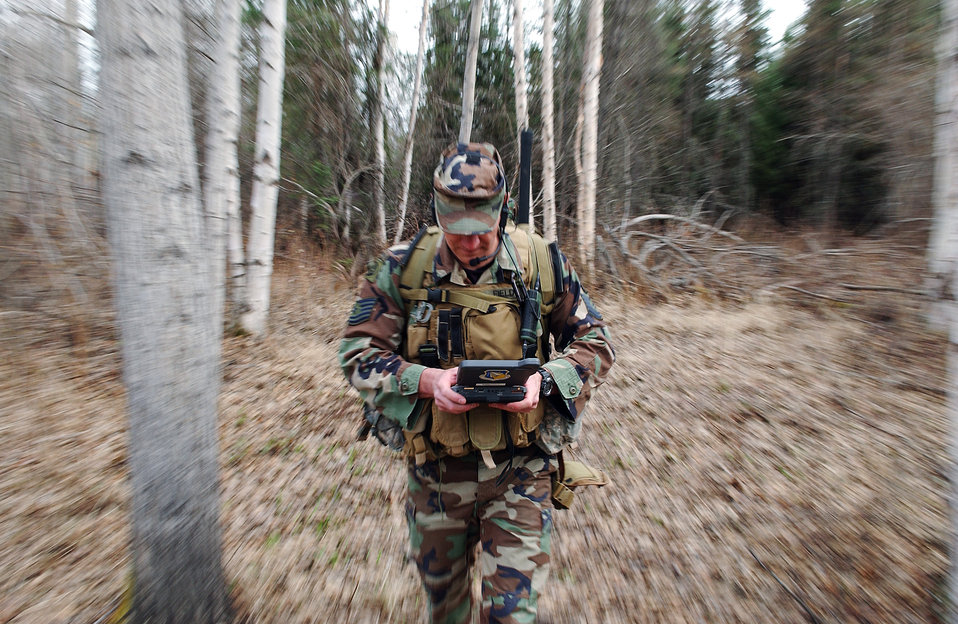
New experimental equipment enhances Airmen capabilities

Tech. Sgt. Sean Field tests the new experimental MR-1 small computer in the field by navigating to the specific Global Positioning Satellite coordinates during Exercise Northern Edge May 12 at Eielson Air Force Base, Alaska. After several tests, the Airmen will provide feedback on how the equipment worked and if any improvements could be made before the equipment will be used in combat situations years from now. Sergeant Field is a tactical air control party Airman assigned to Det. 1, 3rd Air Support Operation Squadron from Fort Richardson, Alaska.